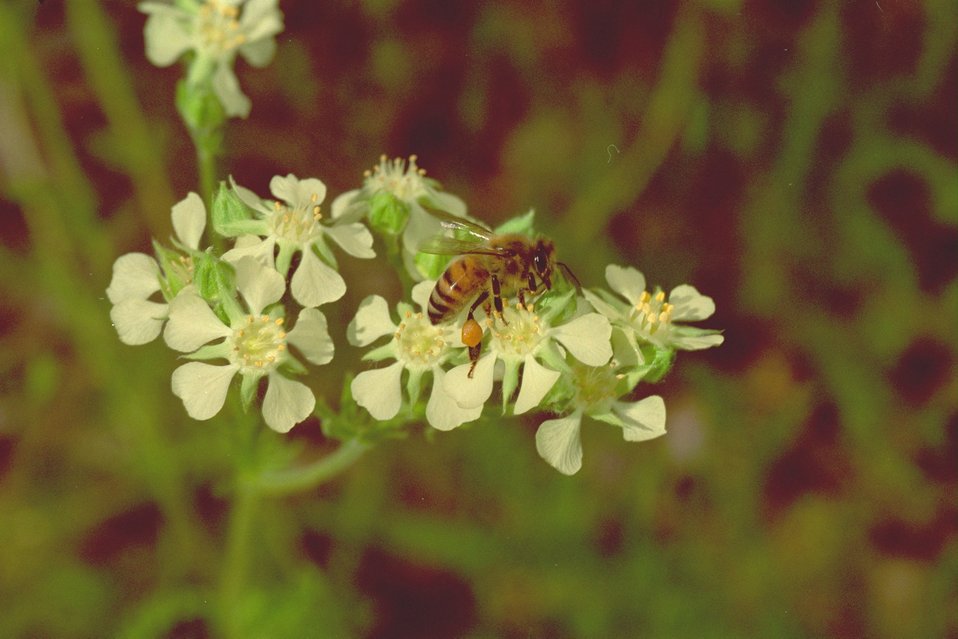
Honeybee on unknown flower at Upper Table Rock.